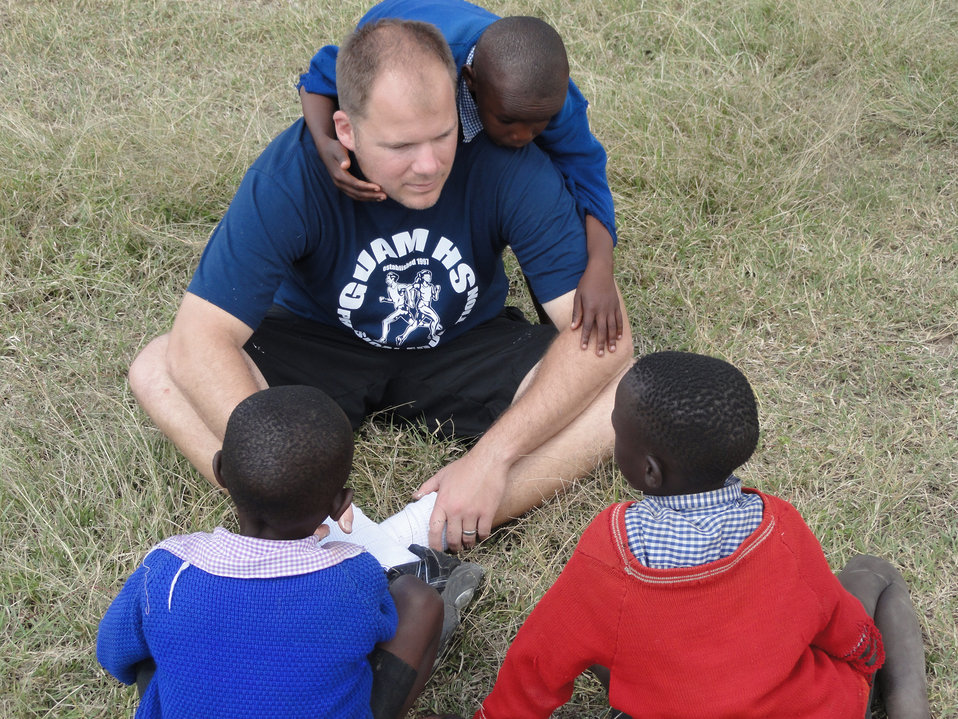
Africa Service

Maj. Jonathan Gration plays with children at the Hope for Life Orphanage in Nakuru, Kenya. Major Gration and his wife, Capt. Julie Gration, raised money to donate solar cookers to the women of Abu Shouk camp in Sudan and traveled to Kenya to complete a service project at Hope for Life, an orphanage for children who have lost their parents to AIDS. Major Gration is assigned to the 90th Fighter Squadron and Captain Gration is a Reservist assigned to the 477th Fighter Group, both at Joint Base Elmendorf-Richardson, Alaska.